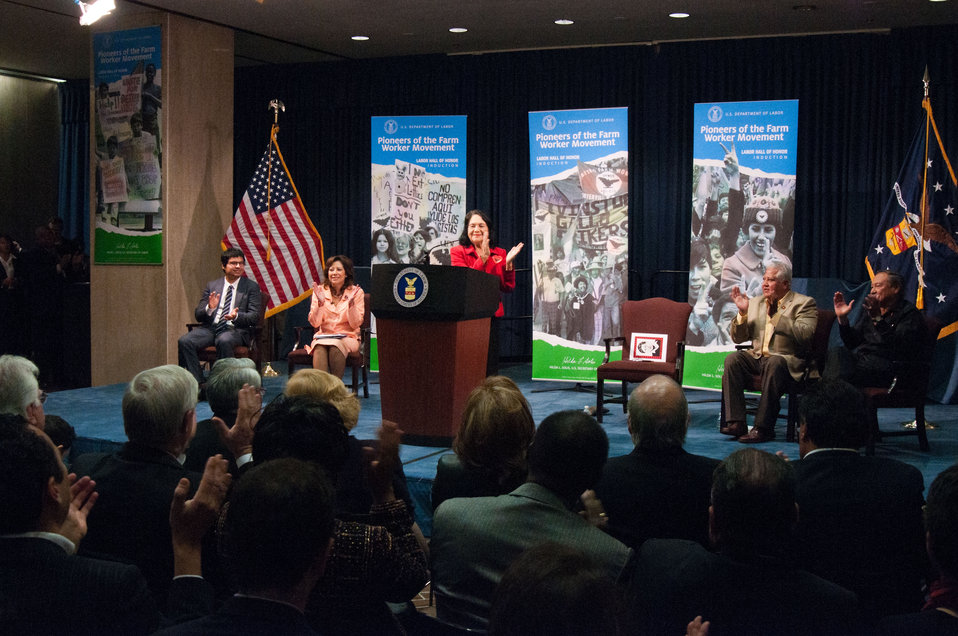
Dolores Huerta, a partner in founding the United Farm Workers Union of America spoke of the diligence, dedication and effort by Cesar Chavez, a Mexican-American labor leader who used non-violent methods to fight for the rights of migrant farm workers in the southwestern United States. Behind Huerta from left are: Michael Pena, actor, Labor Secretary Hilda Solis, Paul Chavez and Arturo Rodriguez, President, United Farm Workers of America. Chavez founded the Cesar Chavez Foundation, a group that advocates for the rights of farm workers, acting to increase wages and improve the working conditions and safety of farm workers during the dedication of the Cesar E. Chavez Memorial Auditorium at the United States Department of Labor in Washington, D.C., Monday, March 26, 2012.